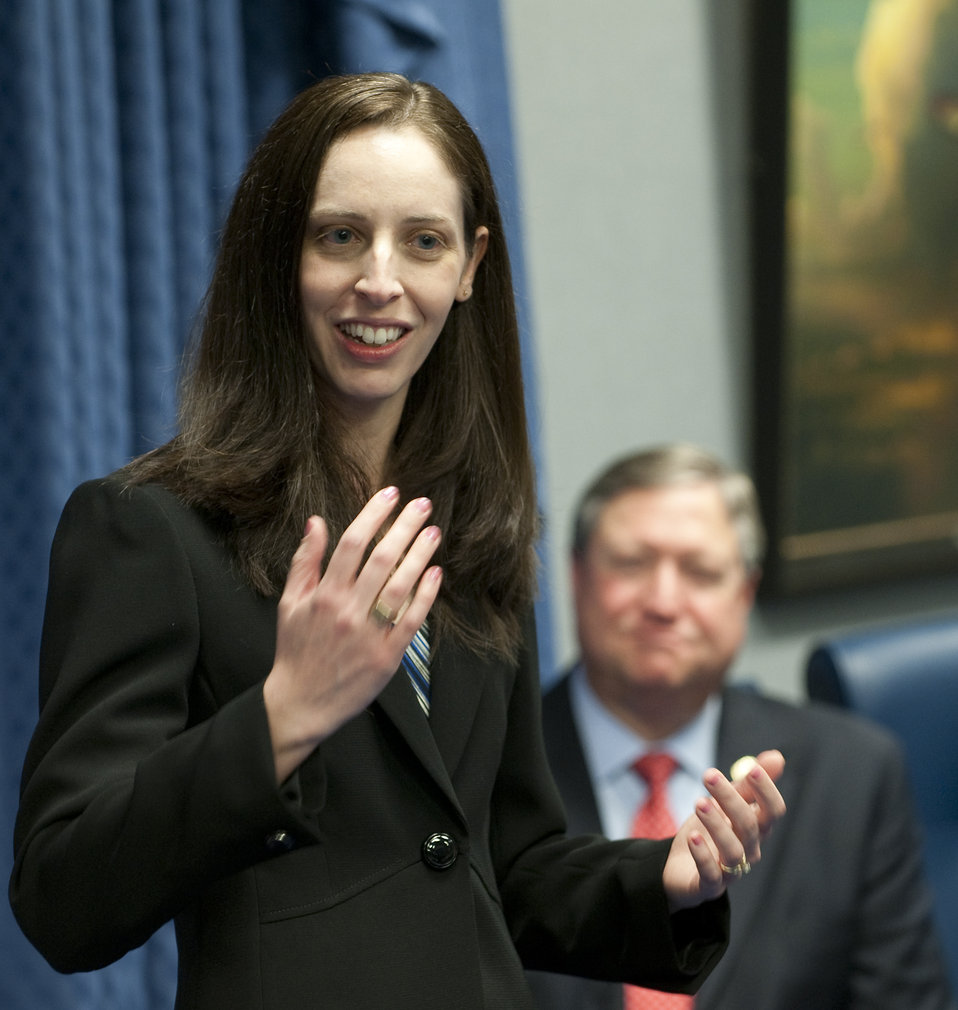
2010 Harold Brown Award

Dr. Candace Lynch gives her remarks after she was presented the 2010 Harold Brown Award by Secretary of the Air Force Michael Donley during a ceremony in the Pentagon Dec. 15, 2010. The award was named for Harold Brown, a physicist who served as secretary of the Air Force from 1965 to1969. Dr. Lynch is the first female recipient of the award since its inception in 1969.